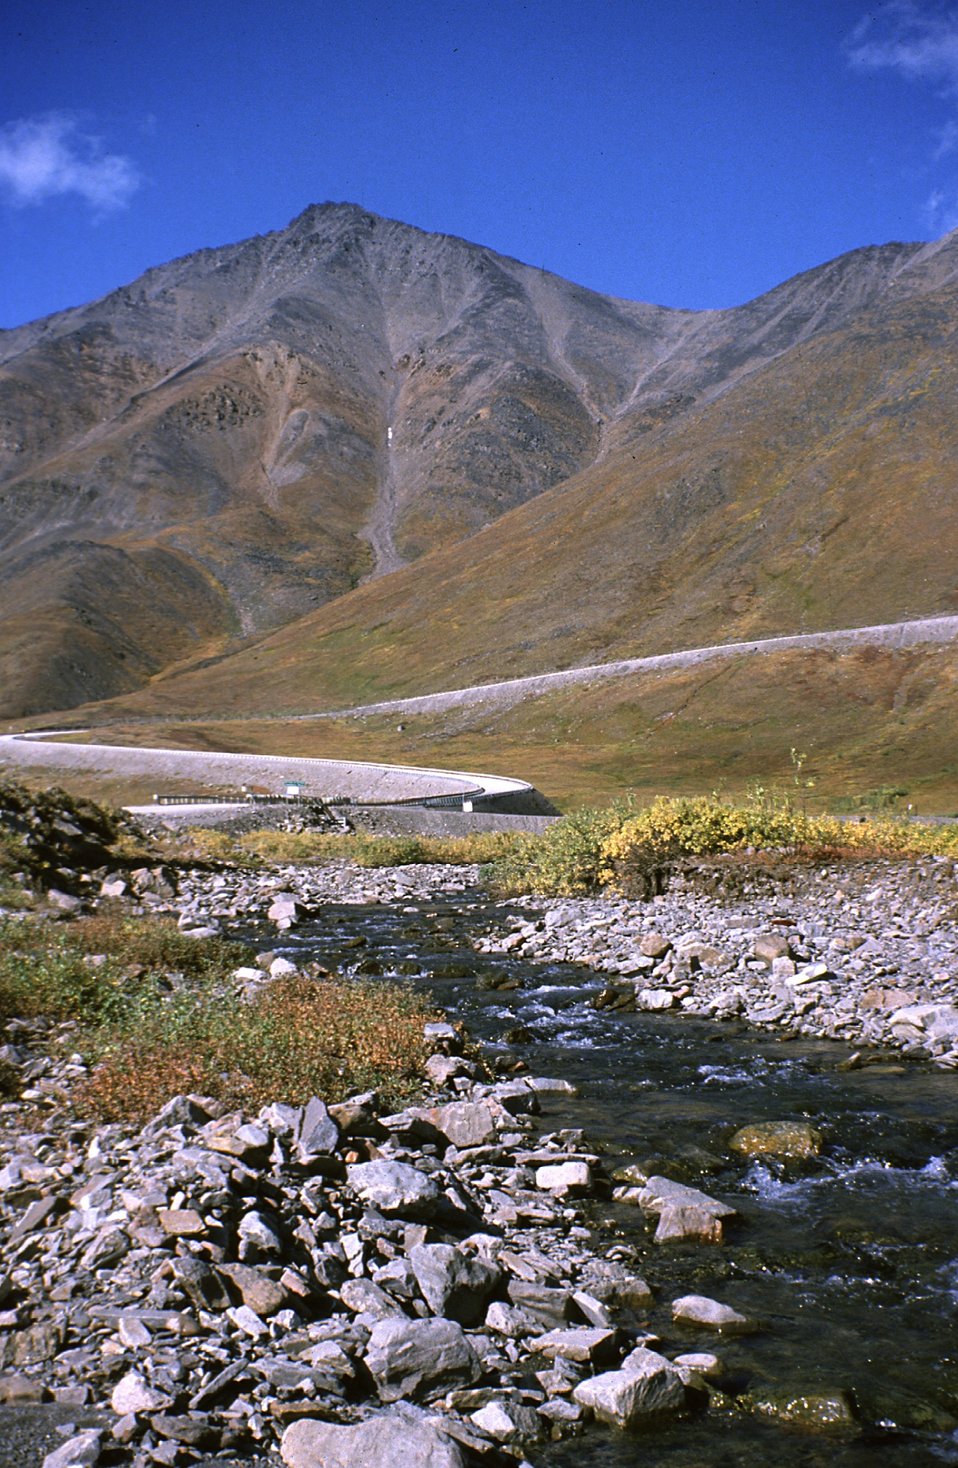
Atigun Pass, Brooks Range, Dalton Highway